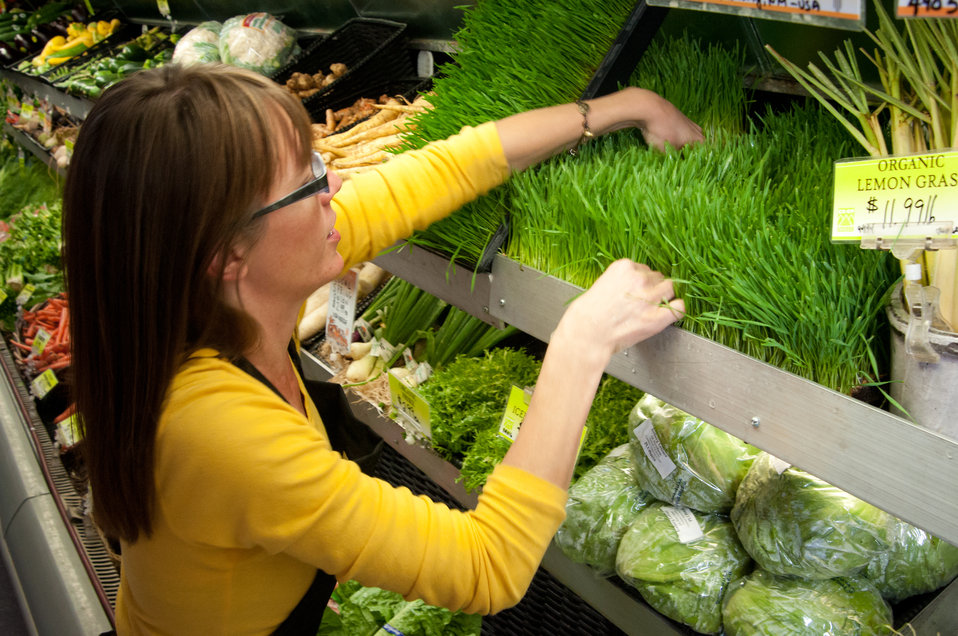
La Montanita Co-op Produce Manager Amanda Dobron checks wheatgrass in the fresh produce section at the La Montanita Co-op Valley Store in Albuquerque, NM on Monday, Jun. 10, 2013. La Montanita Co-op is a 17,000 member socially responsible, locally owned food cooperative that supports a stable market for local farmers and producers of sustainable and organic regional/local agriculture in Albuquerque, NM. The co-op has a distribution center and two stores in Albuquerque; Valley and Nob Hill and stores in Santa Fe and Gallup, NM.